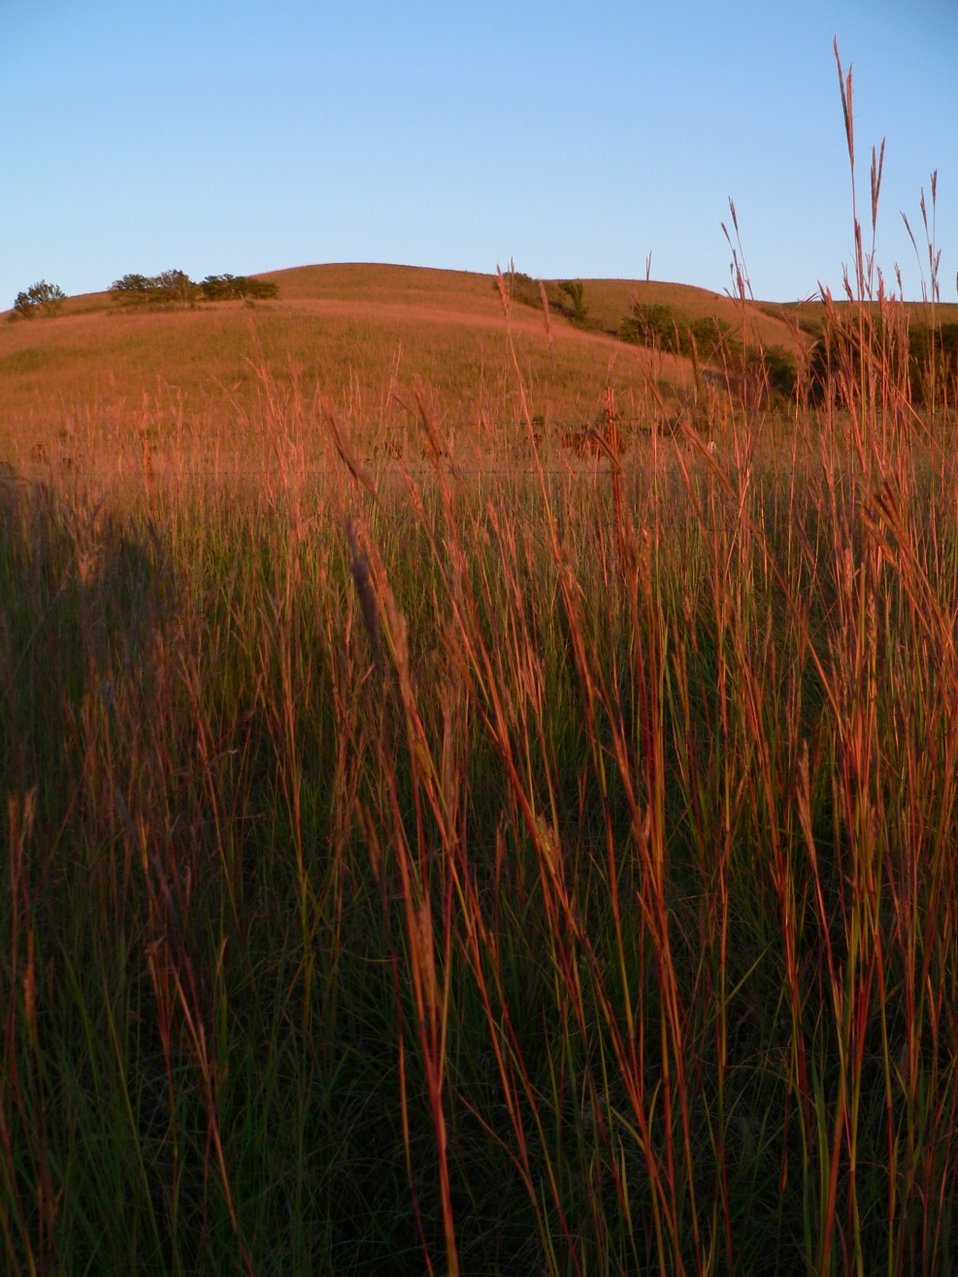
Prairie Grass

The Flint Hills contain some of the largest remnants of tallgrass prairie habitat remaining in North America.